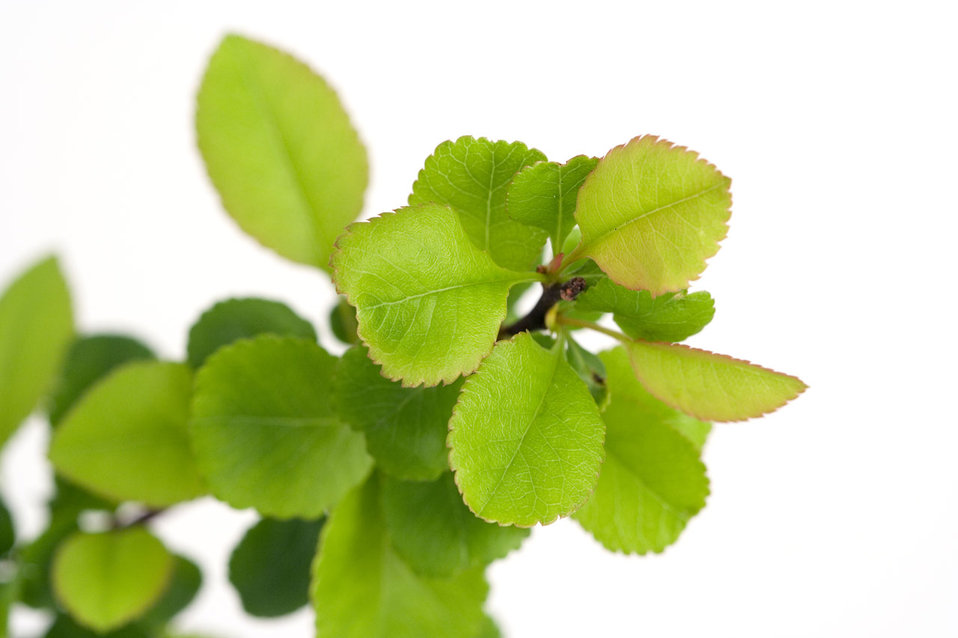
Fresh leaves

Fresh green leaves on white background.